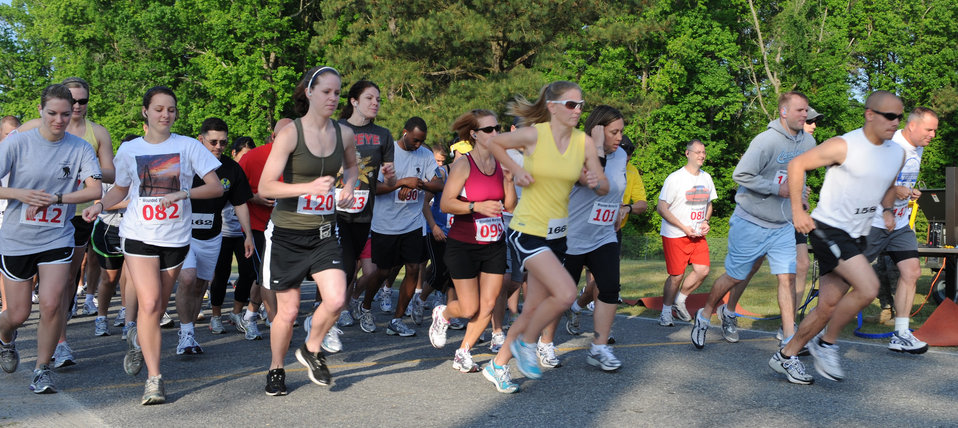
Wounded Warrior Project

Runners from the 4th Fighter Wing at Seymour Johnson Air Force Base, N.C. and the local community of Goldsboro kick off the Wounded Warrior Project half marathon and 10-kilometer race May 1, 2010. The race raised money for the project which supports servicemembers injured in combat operations.